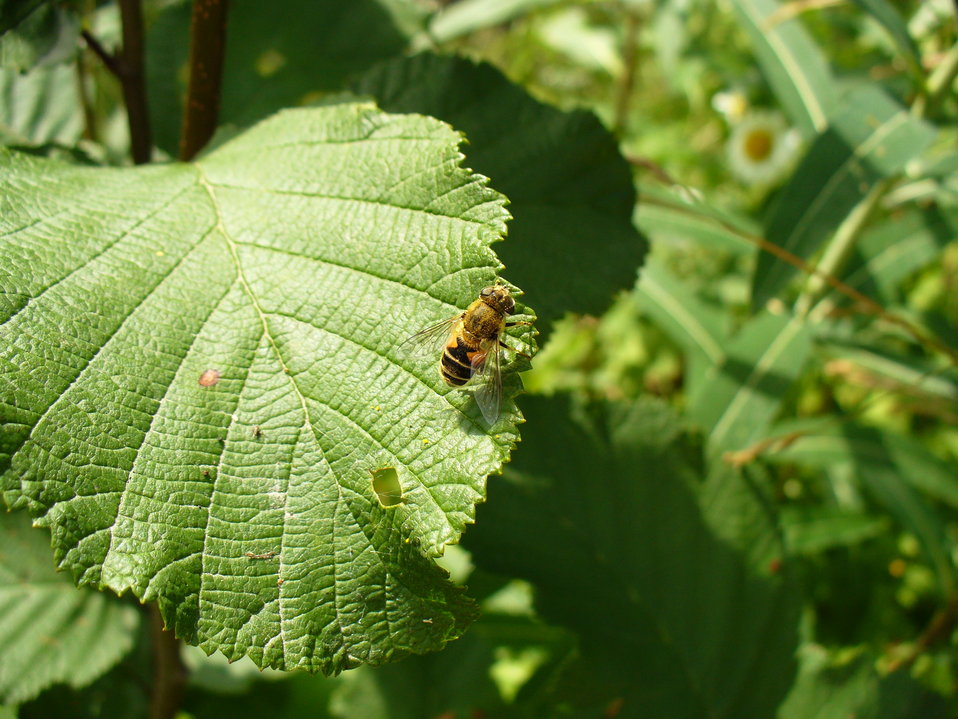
I am the originator of this photo. I hold the copyright. I release it to the public domain. This photo depicts an insect.